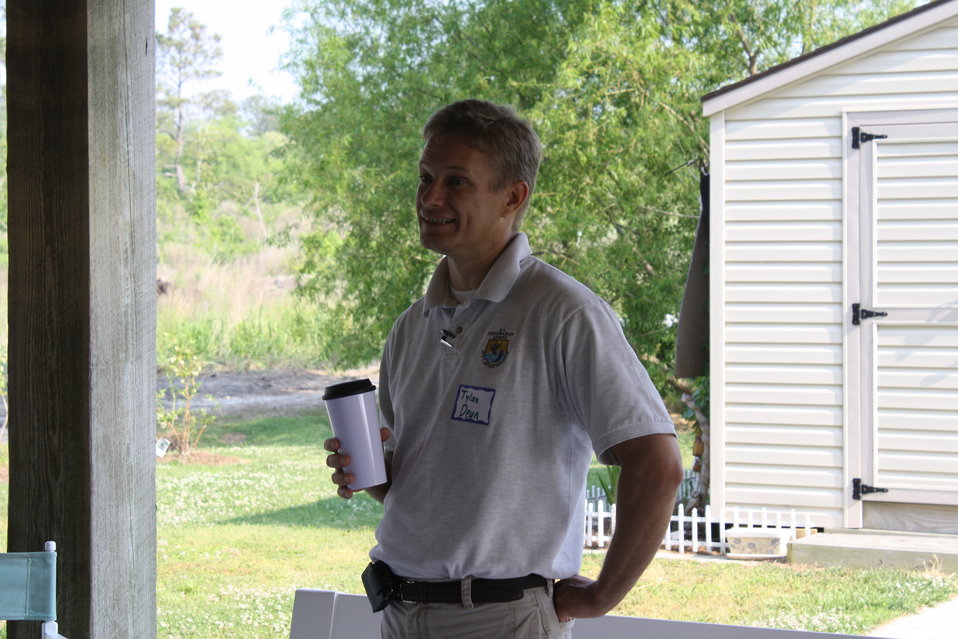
Bavon Beach project

Tylan Dean with the U.S. Fish and Wildlife Service has worked with the Bavon Beach landowners and partners to find a solution that would benefit both the tiger beetle and the homeowners.